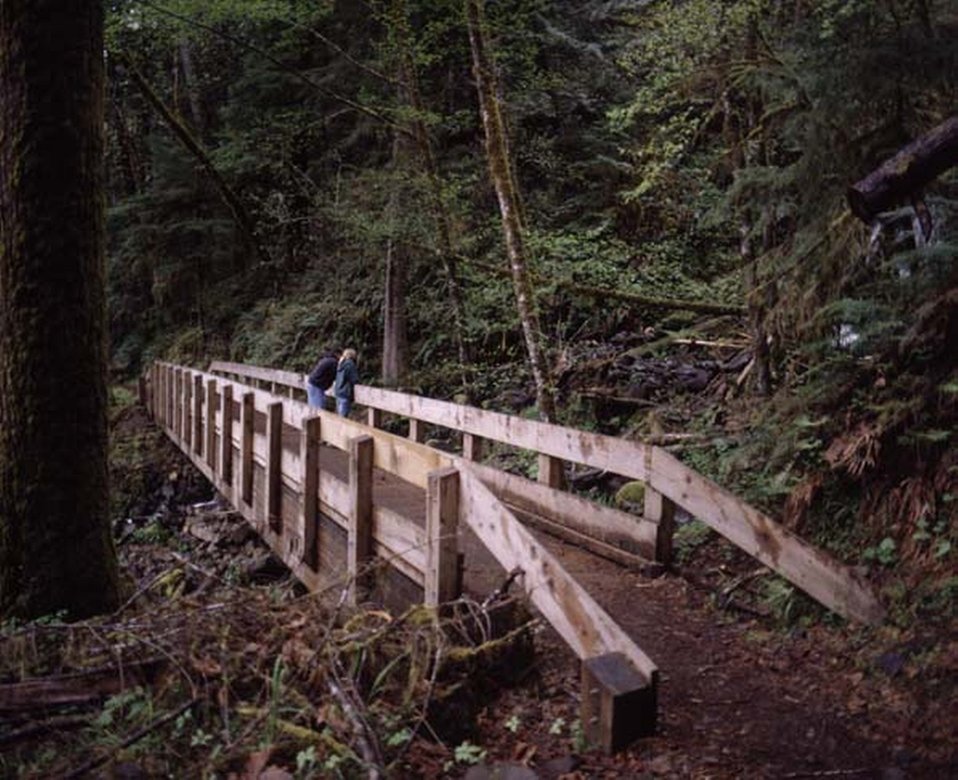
Medium shot of a wooden foot bridge along the North Umpqua Recreational Trail in Swiftwater.